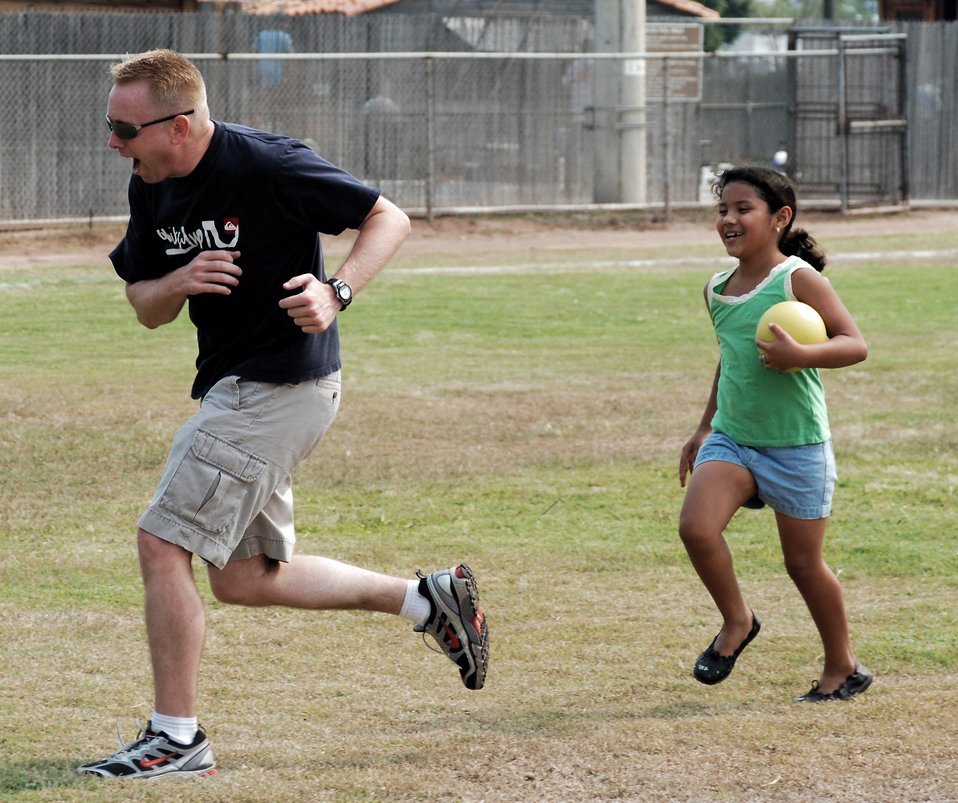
Airmen in Honduras host special day for local children

Master Sgt. Jon Callaway plays tag with a girl from the Hogar de Guadalupe Orphanage during a kid's day May 18 at Soto Cano Air Base, Honduras. Members of the 612th Air Base Squadron holds the event yearly to provide a day of fun and games for children of the orphanage the unit sponsors. Sergeant Callaway is the 612th ABS Logistics Flight superintendent.